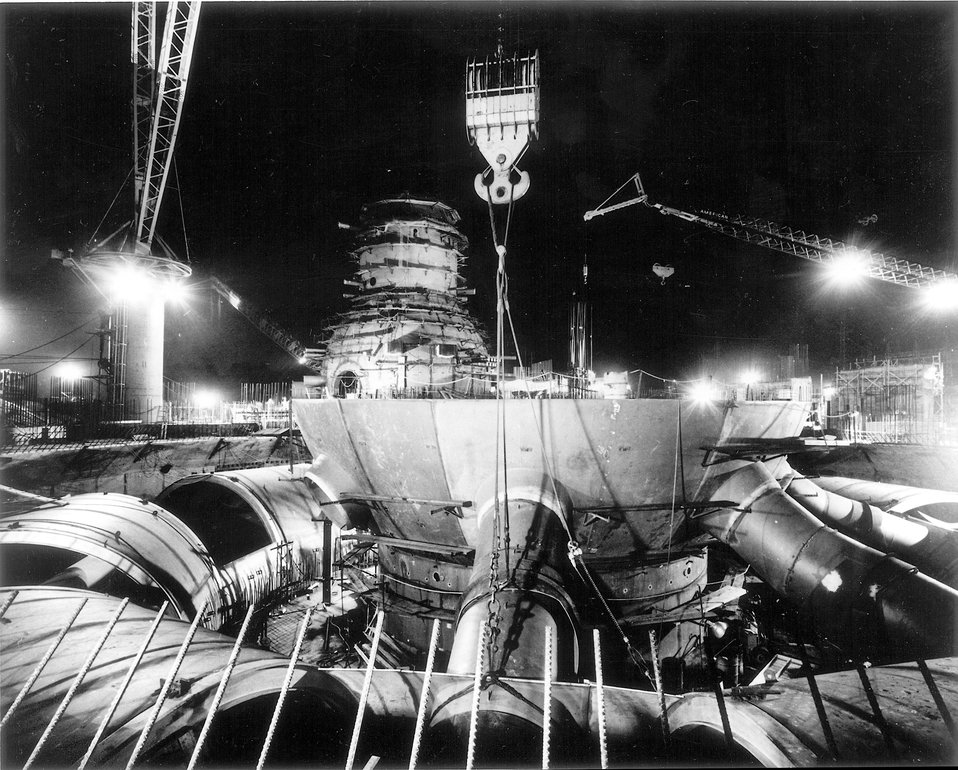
TVA Browns Ferry Nuclear Power Plant under construction at a site on Wheeler Lake, 10 miles southwest of Athens, Alabama. Circa 1970.